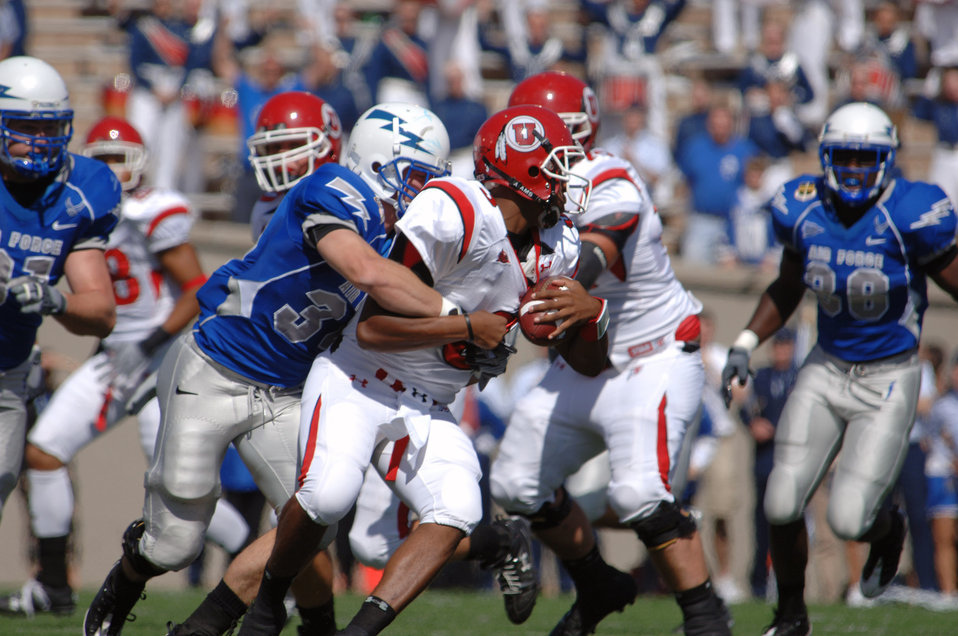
Football: Utah downs Air Force 30-23

U.S. Air Force Academy safety Chris Thomas wraps up Utah quarterback Brian Johnson for a loss Sept. 20 at the Academy in Colorado. Thomas ended the game with one sack, one fumble recovery, and eight tackles, including this tackle for loss.